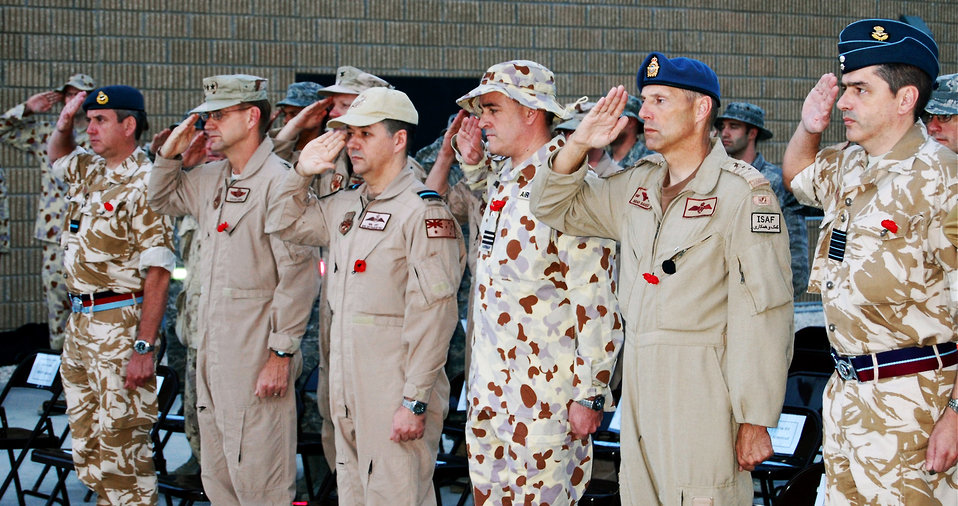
Coalition airmen observe day of remembrance

Senior officers from the air components of the United Kingdom, the United States, Australia, Canada and France present arms during the Australian National Anthem April 25, 2010, in Southwest Asia. Each wore a red poppy, the traditional symbol of remembrance for Australian and New Zealand Army Corps Day.